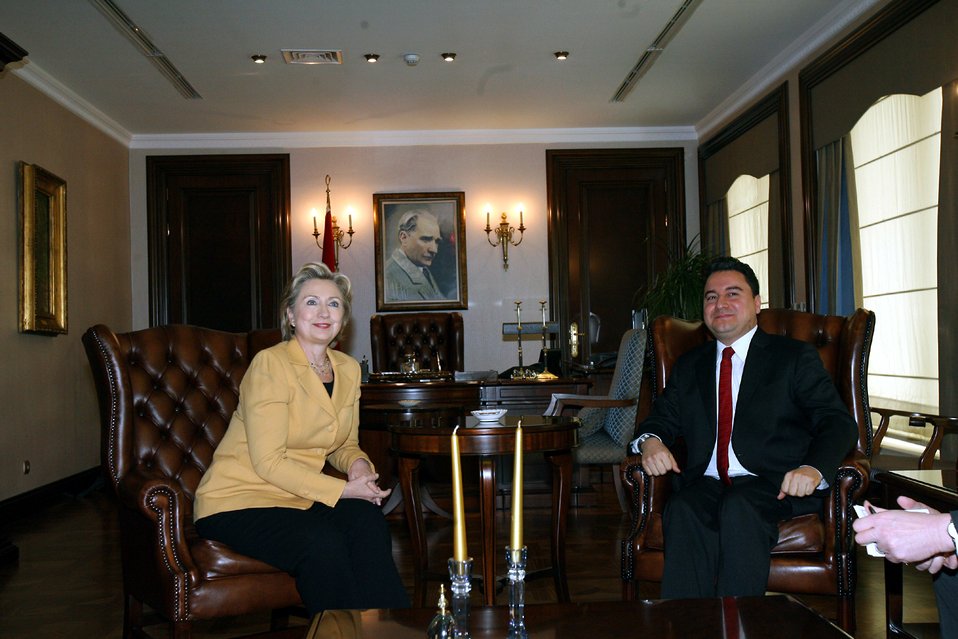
Secretary Clinton With Turkish Foreign Minister

U.S. Secretary of State Hillary Rodham Clinton meets with Turkish Foreign Minister Ali Babacan at the Turkish Ministry of Foreign Affairs, in Ankara, Turkey March 7, 2009.